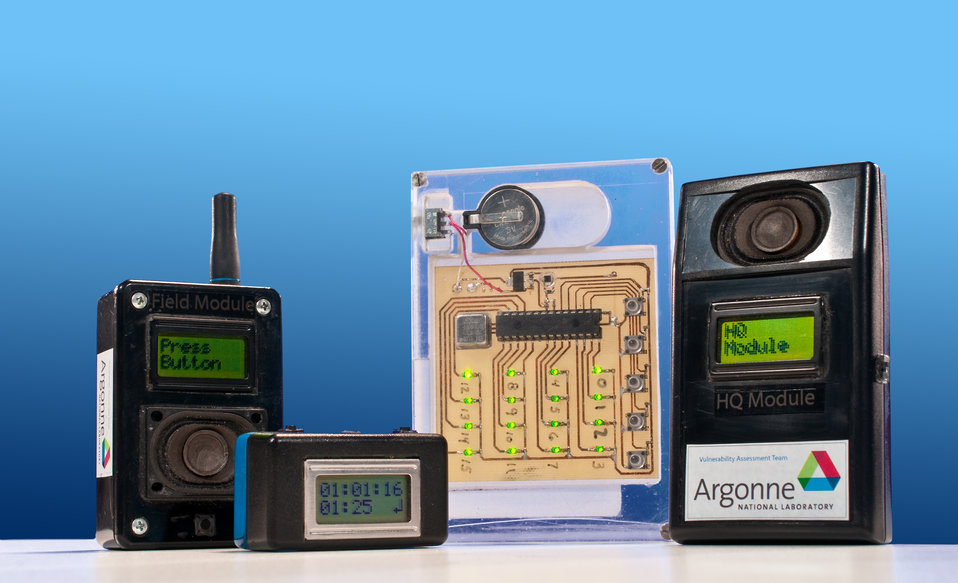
Argonne National Laboratory's Vulnerability Assessment Team (VAT) develops novel prototype security devices for improved tamper/ intrusion detection, real timing monitoring, cargo security, and nuclear safeguards.